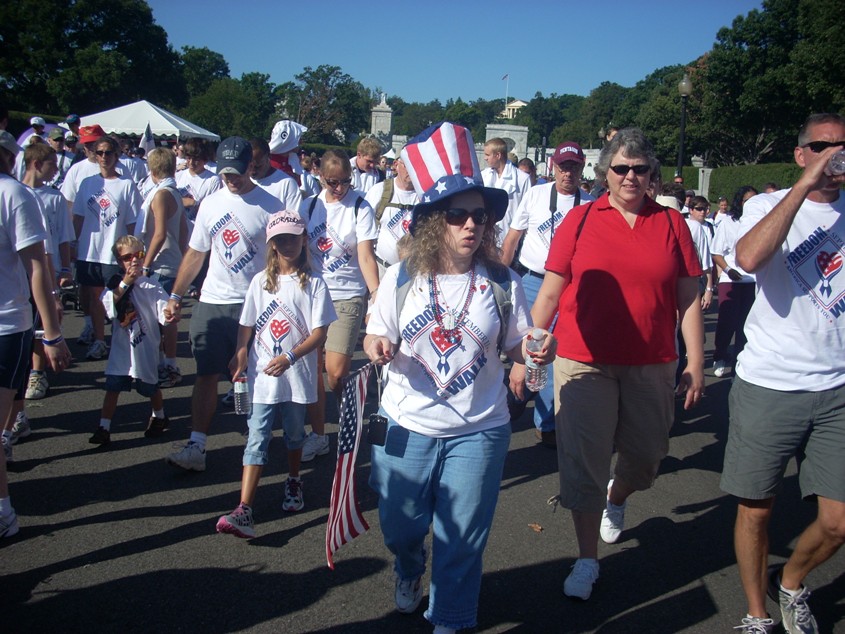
Thousands walk for freedom in Washington D.C.

Wearing an oversized red, white and blue hat, Sarah Bauman of Alexandria, Va., departs from the starting point of the Fourth Annual America Supports You Freedom Walk Sept. 7, in Washington, D.C. The Freedom Walk is one of 330 such events designed to remember the Sept. 11, 2001, terrorist attacks on the United States.